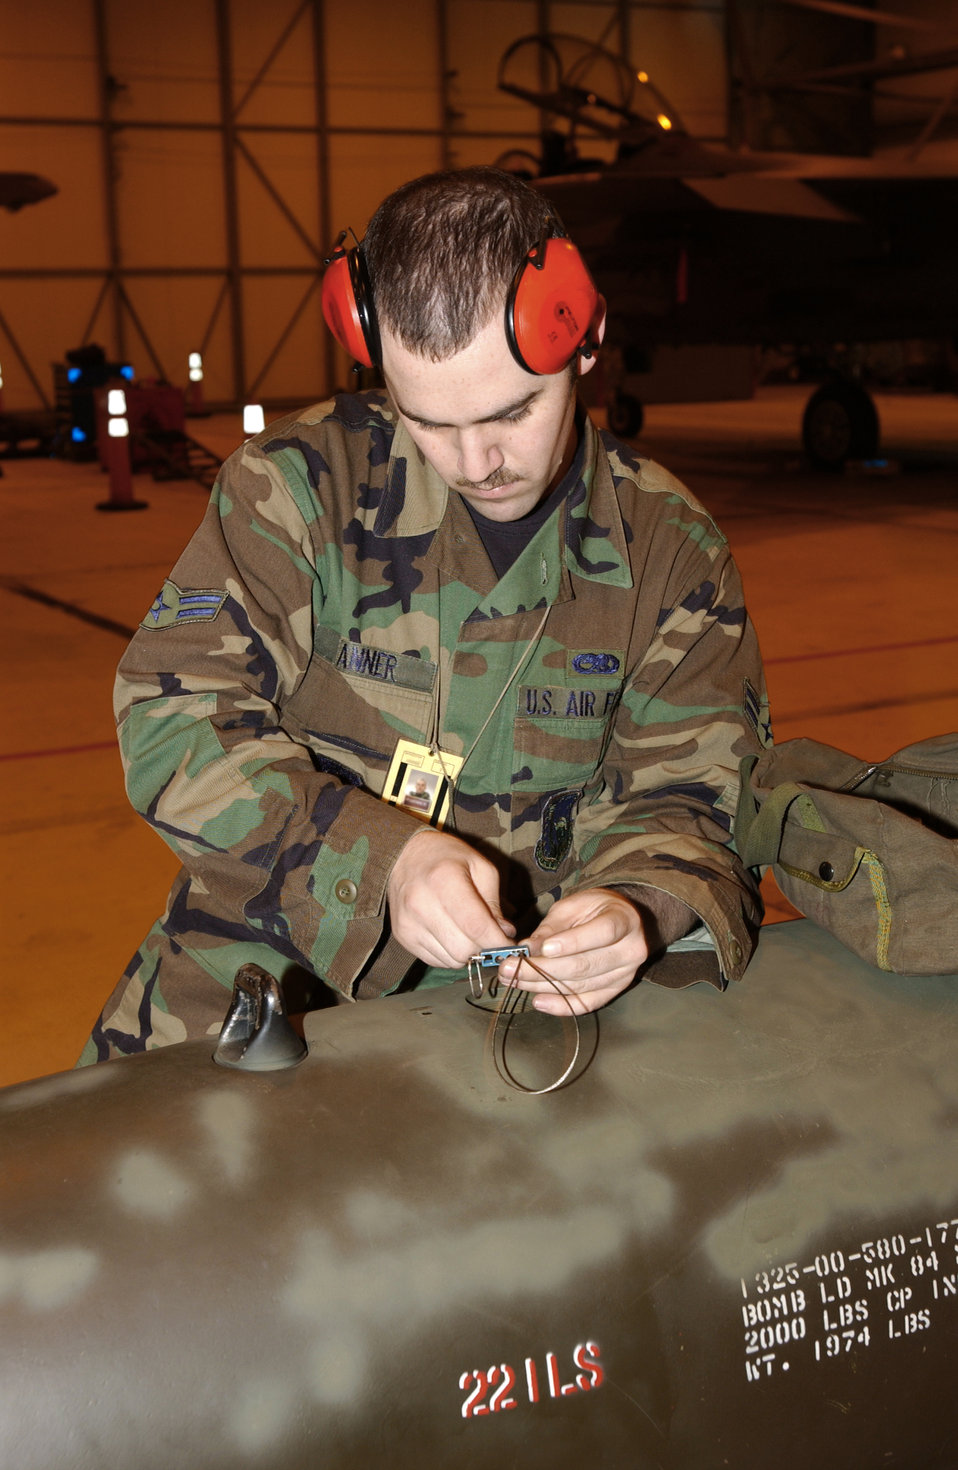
Function check

ROYAL AIR FORCE LAKENHEATH, England -- Airman 1st Class Oliver Tanner performs function checks on a guided-bomb unit April 7 during a weapons training exercise. Airman Tanner is an aircraft armament systems apprentice with the 48th Aircraft Maintenance Squadron.